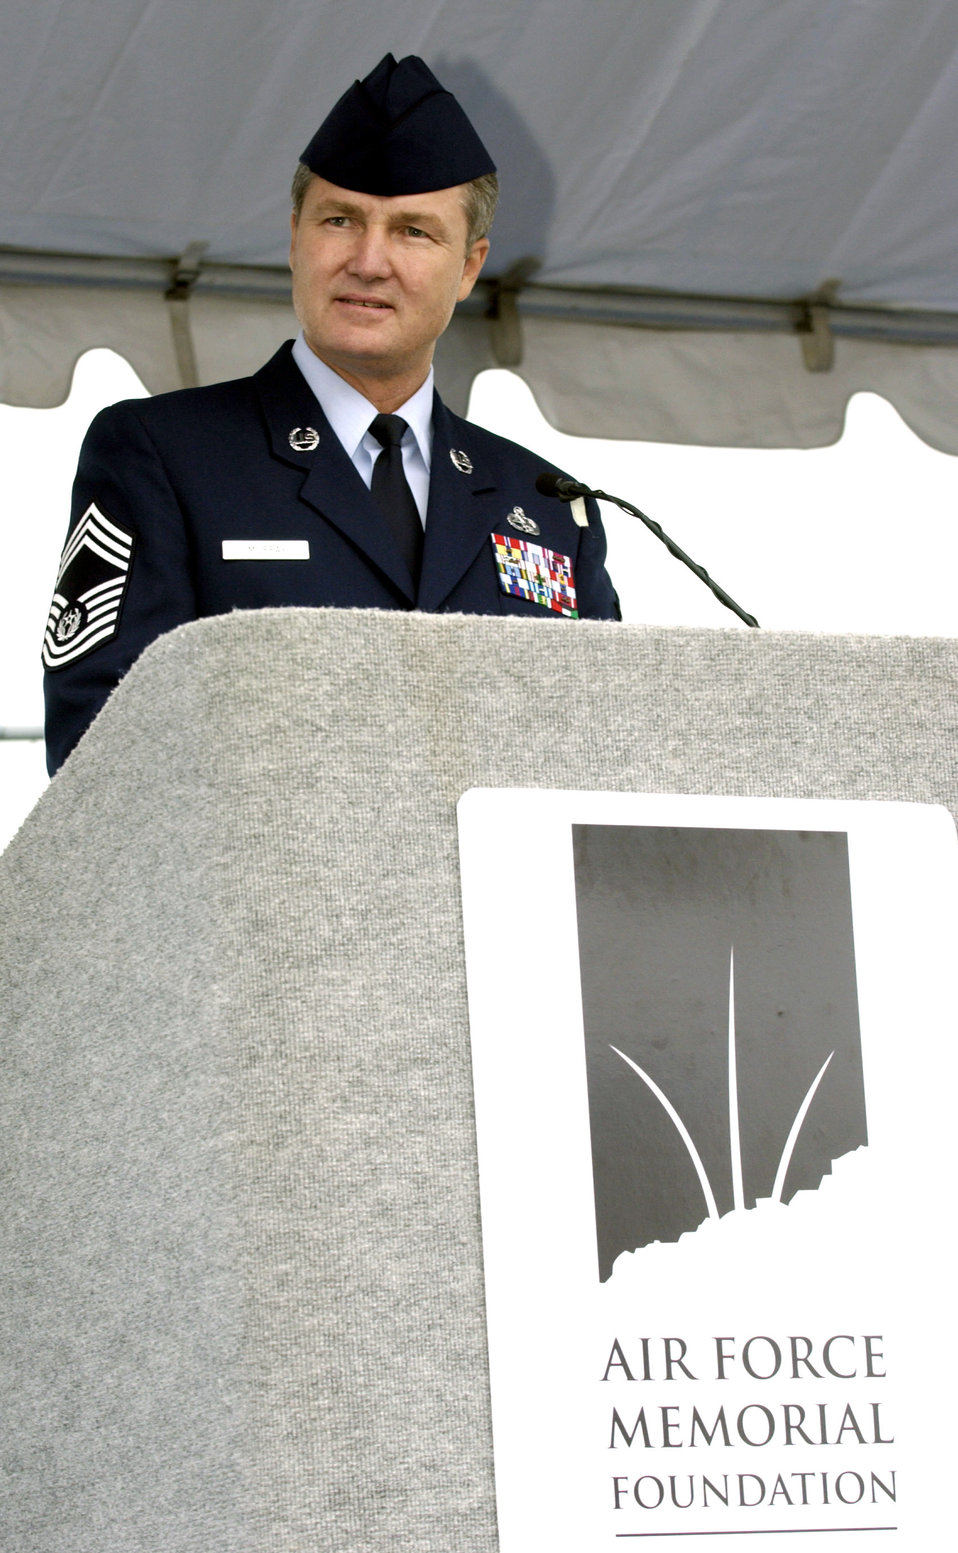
Thirteen years later, Air Force dedicates its memorial

ARLINGTON, Va. -- Chief Master Sgt. of the Air Force Gerald R. Murray addresses hundreds of people gathered for the official groundbreaking and site dedication ceremony on the site of the future national Air Force Memorial on Sept. 15. The 270-foot tall memorial is designed to honor all those who have served in the U.S. Air Force and its predecessor organizations.